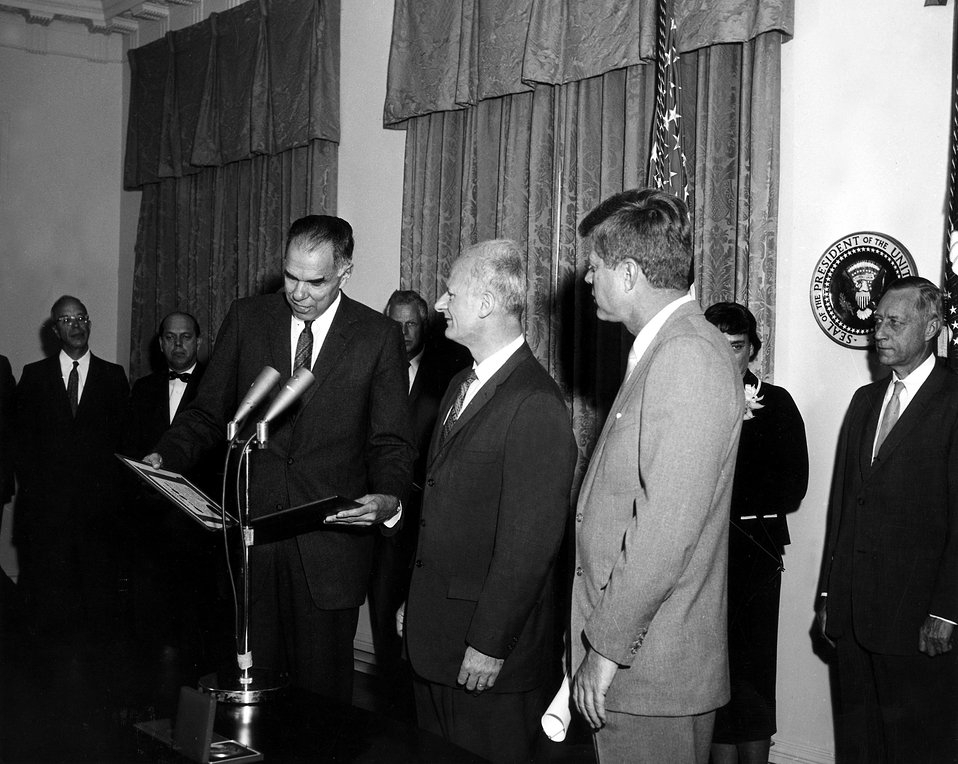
President John F. Kennedy.